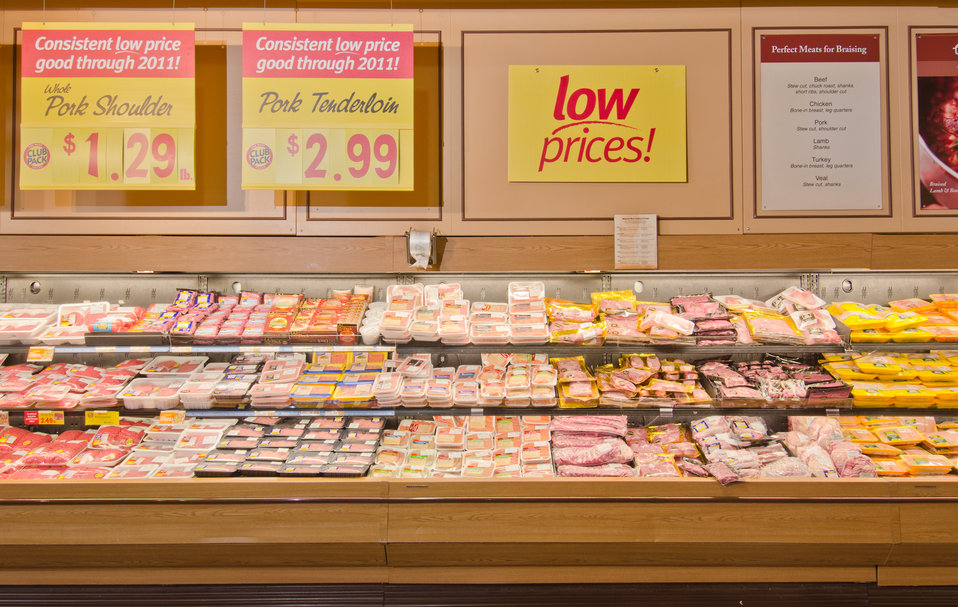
Meat and poultry products at a grocery store in Fairfax, Virginia, on March 3, 2011.